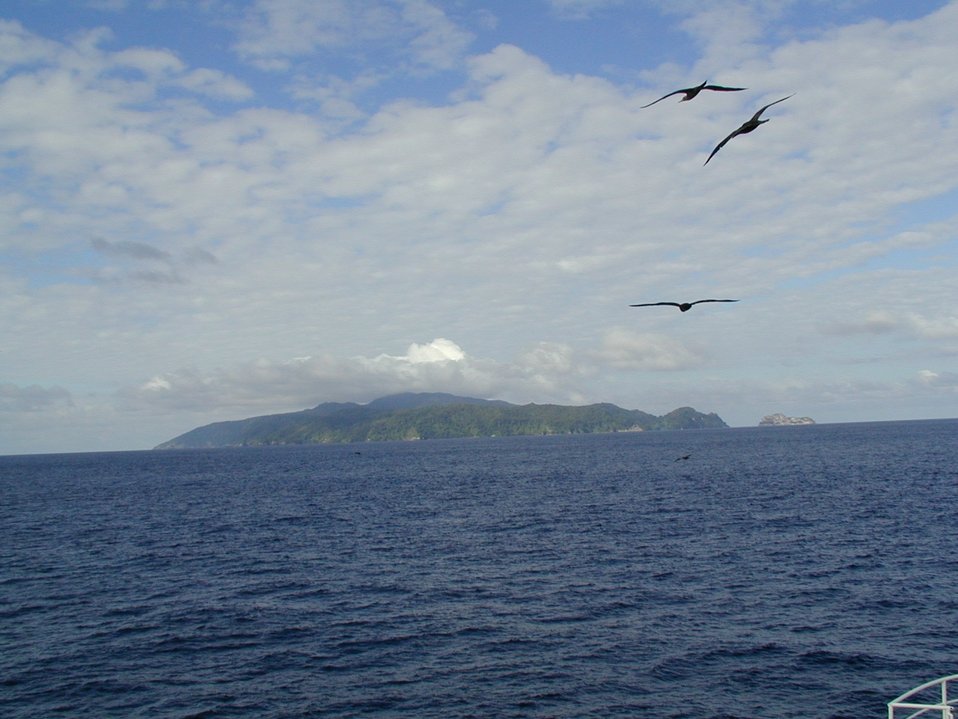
Isla Cocos as seen from the NOAA Ship McARTHUR during STAR 2000 project.